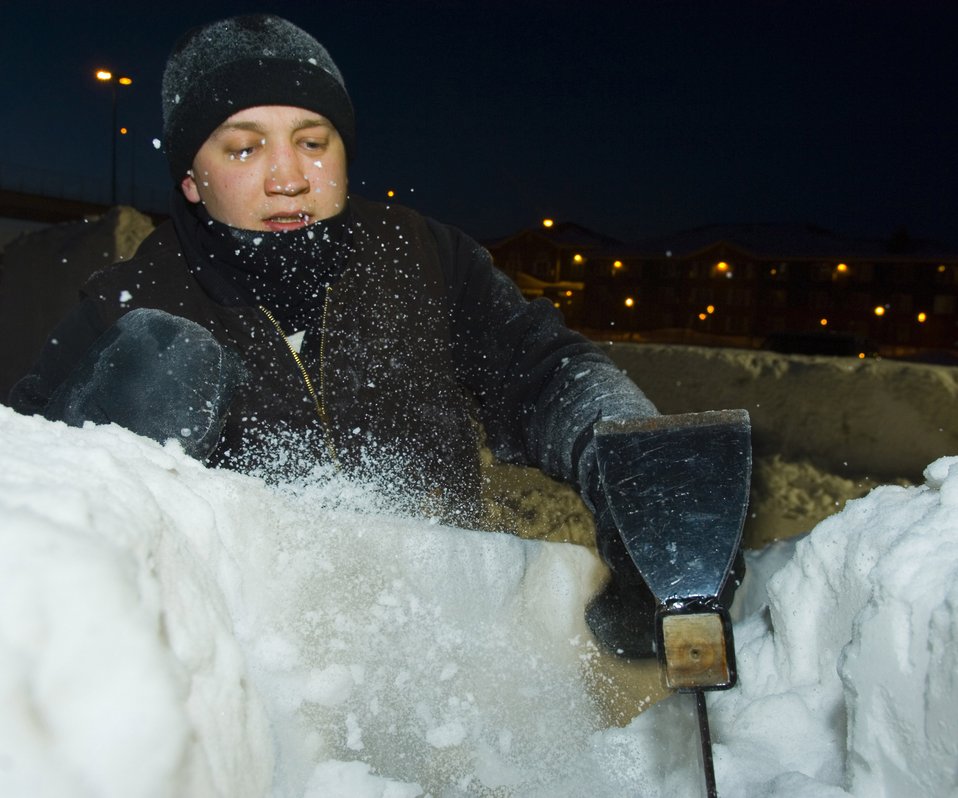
Elmendorf team perfects snow sculpting skills

Staff Sgt. Edward Tompkins, a member of the three-man Elmendorf Air Force Base snow-sculpting team, hacks away at a block of snow carefully forming the stern of a pirate ship Feb. 23 during the Anchorage, Alaska, Fur Rendezvous snow sculpture competition. The team was vying for a chance to be invited to the 2008 National Snow Sculpting Championship in Lake Geneva, Wis. Sergeant Tompkins is assigned to the 3rd Services Squadron.